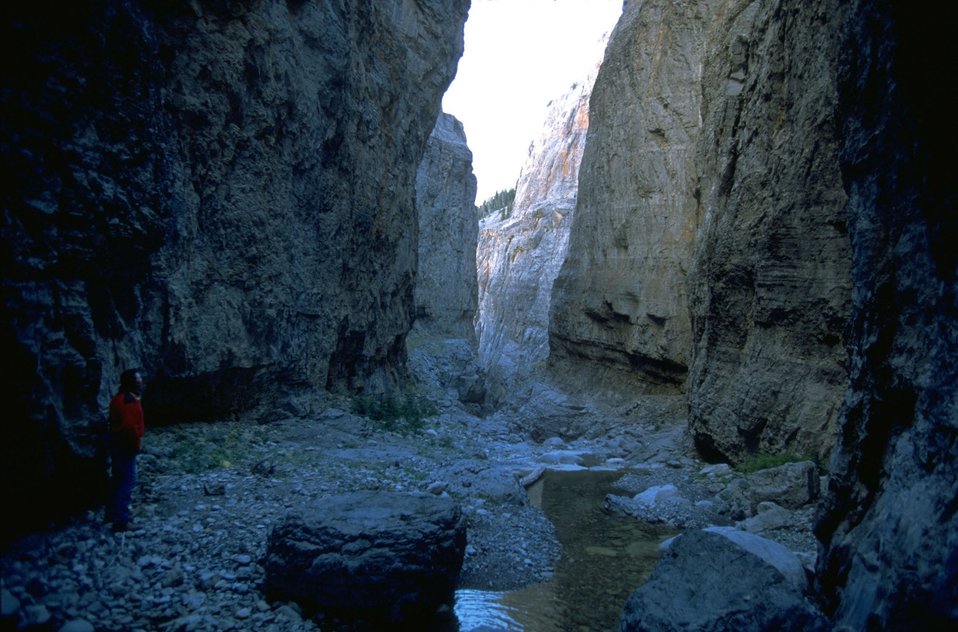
Looking east at Muddy Creek in the Rocky Mountain Front